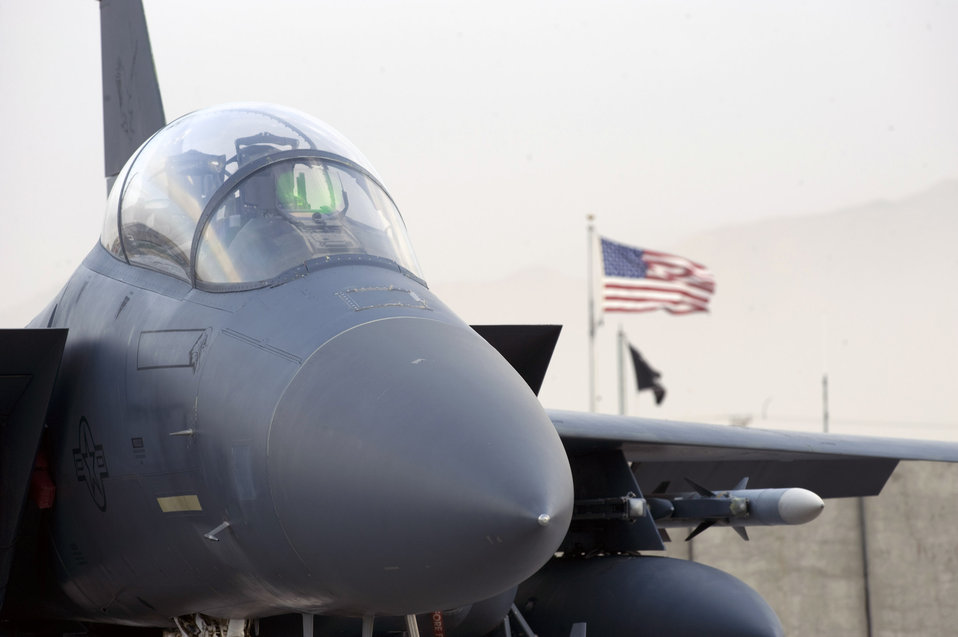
F-15E pilots aid troops fighting in Afghanistan

An F-15E Strike Eagle sits on the flightline after returning from a mission Sept. 15 at Bagram Airfield, Afghanistan. The F-15E is a dual-role fighter designed to perform air-to-air and air-to-ground missions.